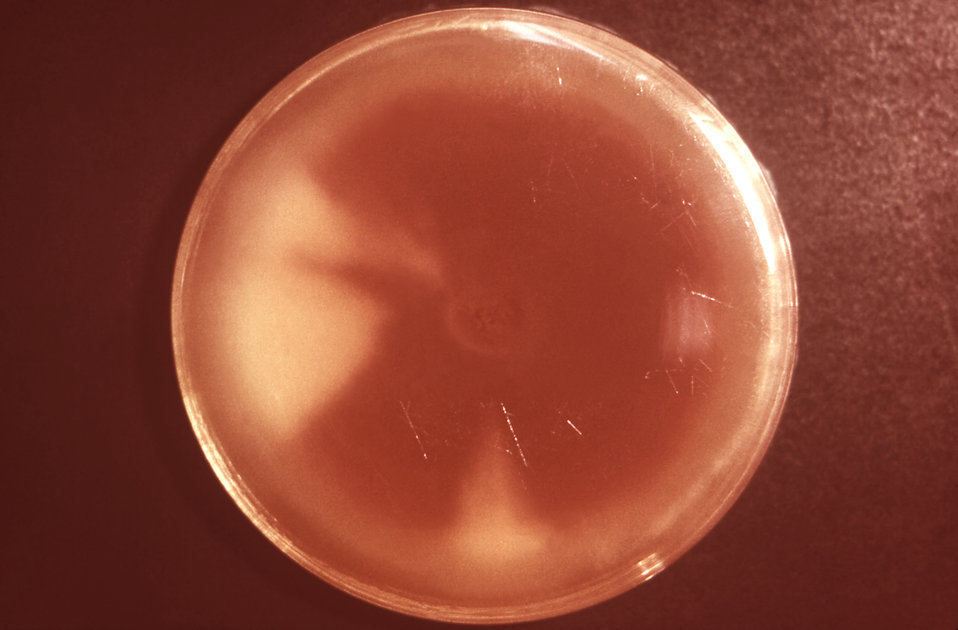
This image depicts a reverse view, i.e., viewed from the back, of a Petri dish culture plate, which contained a colony of Trichophyton mentagrophytes dermatophytic fungal organisms. Note the red coloration exhibited by the growing colony. From the front, T. mentagrophytes colonial coloration ranges from white to bright yellowish-beige to red-violet.